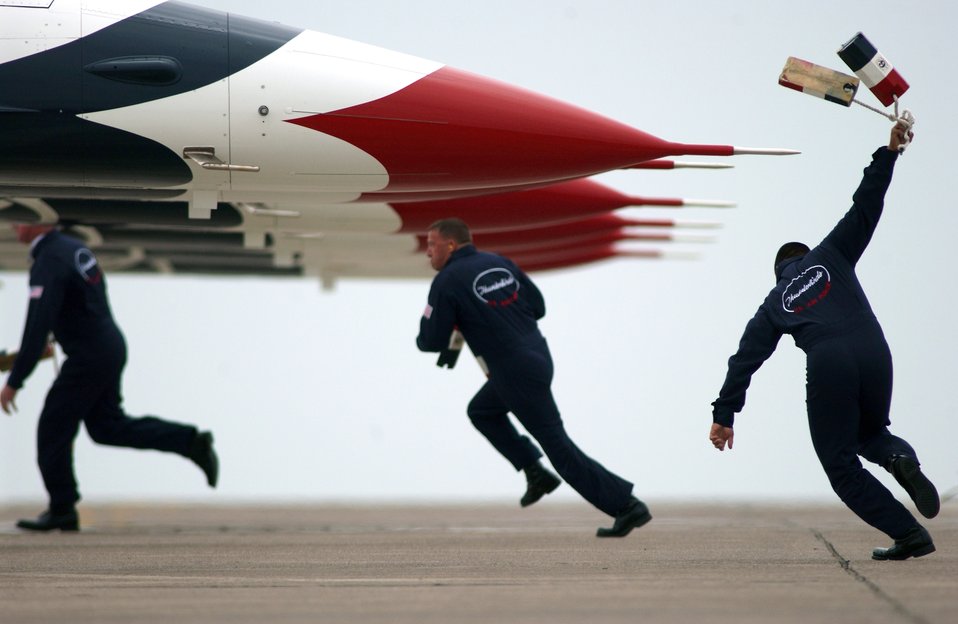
Quick, fast and in a hurry

LAUGHLIN AIR FORCE BASE, Texas -- Crew chiefs for the U.S. Air Force Thunderbirds race to secure F-16 Fighting Falcon aircraft with chocks after landing here April 16.